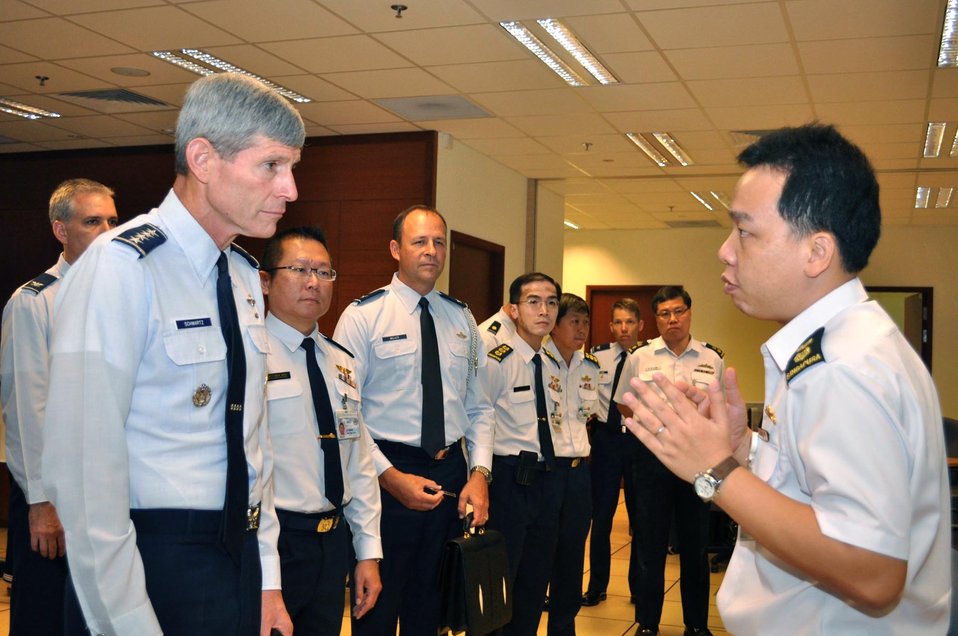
Pacific Endeavor

Air Force Chief of Staff Gen. Norton Schwartz listens to a briefing from Singapore navy Lt. Col. Lim Chye Khiang Aug. 23, 2010, about the Information Fusion Centre, a maritime command center at the Changi Command and Control Center in Singapore. While on the tour, the general was also briefed on Pacific Endeavor, a U.S. Pacific Command humanitarian communication workshop with 16 Asia-Pacific nations, non-governmental organizations and private industry.